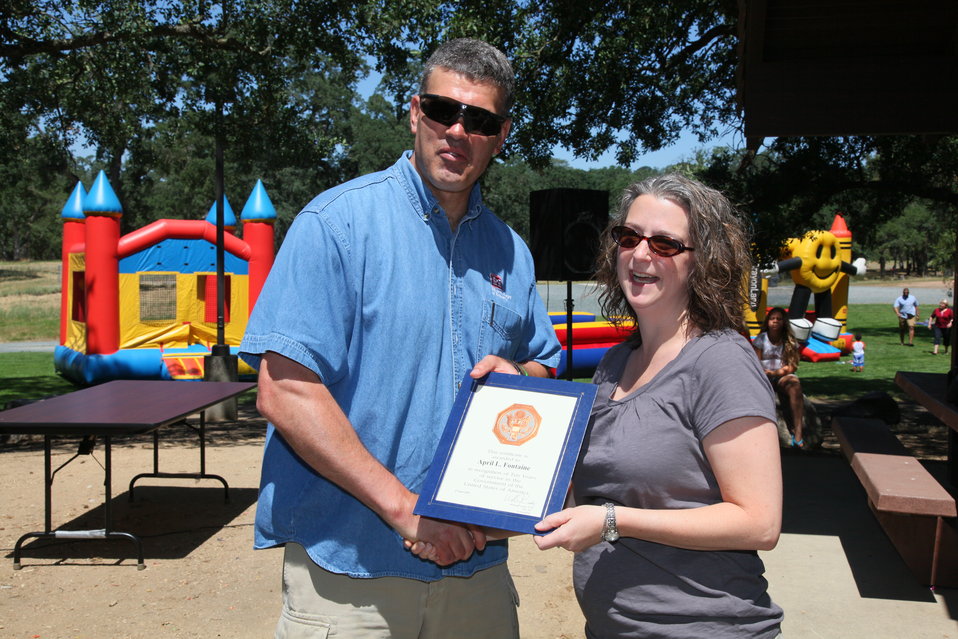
2011 Annual Picnic